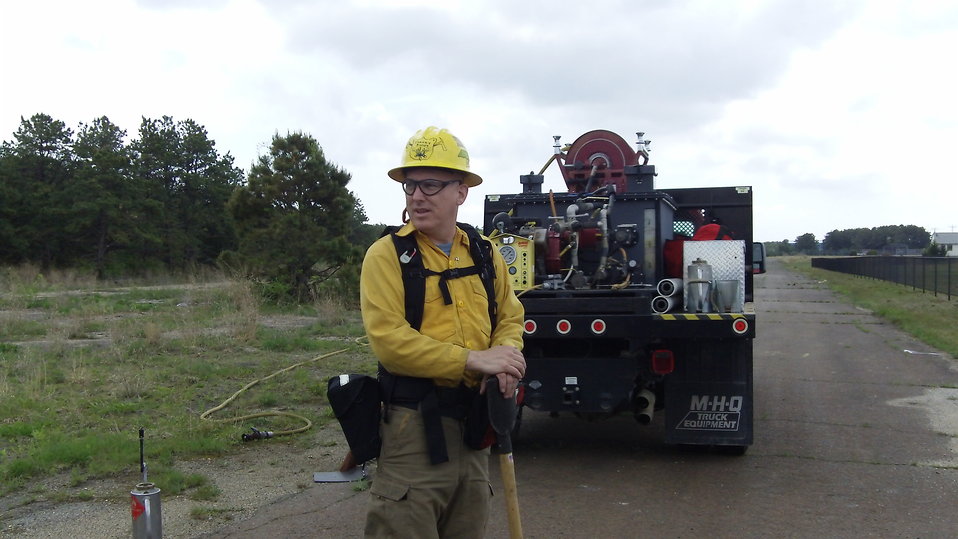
Restoring homes for New England cottontails

The Massachusetts Army National Guard, the Massachusetts Division of Fisheries and Wildlife, the U.S. Fish and Wildlife Service, and other conservation partners hosted an information session at Camp Edwards on the Massachusetts Military Reservation highlighting efforts of the New England Cottontail Initiative, including prescribed burns.